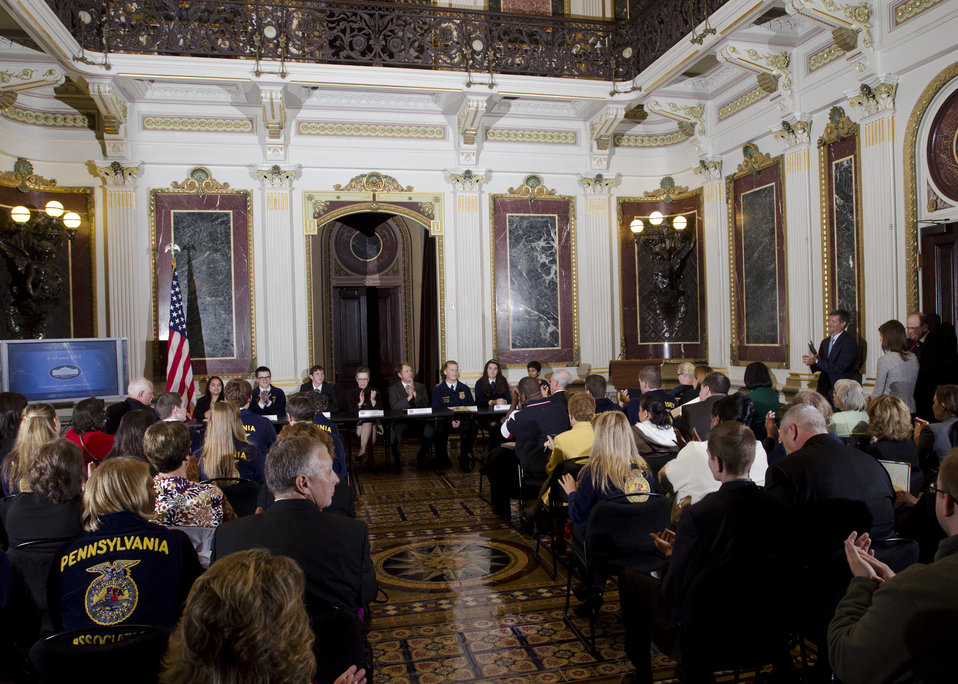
12 members of FFA and 4-H are recognized as Champions of Change at the Executive Office Building in Washington, D.C. on Tuesday, Oct. 9, 2012. The Champions of Change program was created to honor ordinary Americans doing great work in their communities. Each week, a different sector is highlighted and groups of Champions, ranging from educators, entrepreneurs and community leaders, are recognized for the work they are doing to serve and strengthen their communities.